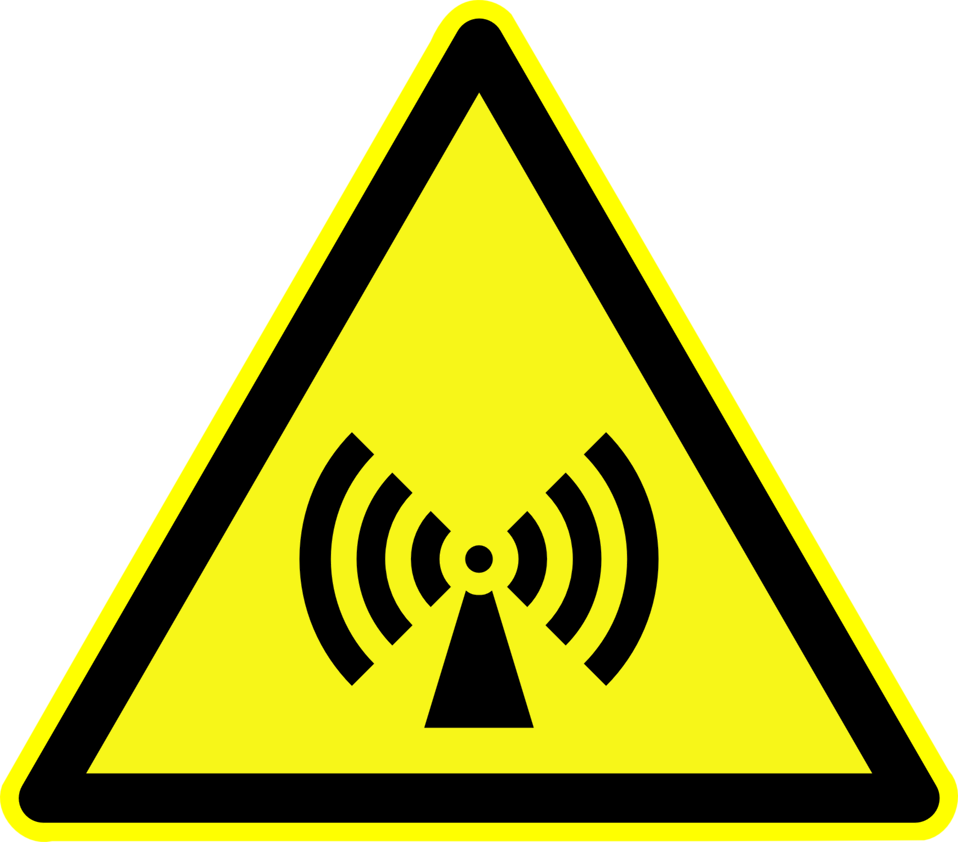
Deutsch: Warnung vor nicht ionisierender, elektromagnetischer Strahlung, Warnzeichen D-W012 nach DIN 4844-2 Non-ionising electromagnetic radiation, warning sign D-W012 according to German standard DIN 4844-2